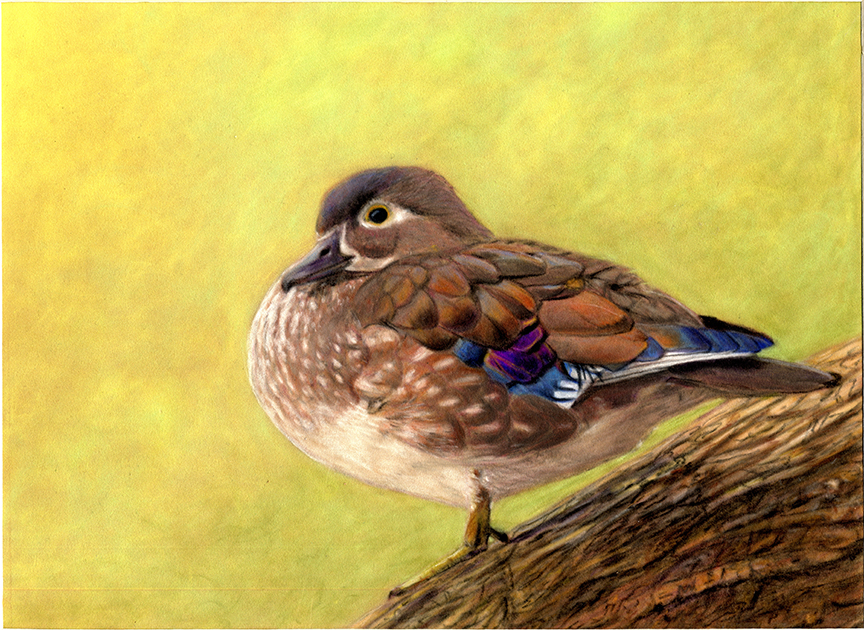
JRDuck2013OR

2013 Junior Duck Stamp Best of Show-Oregon